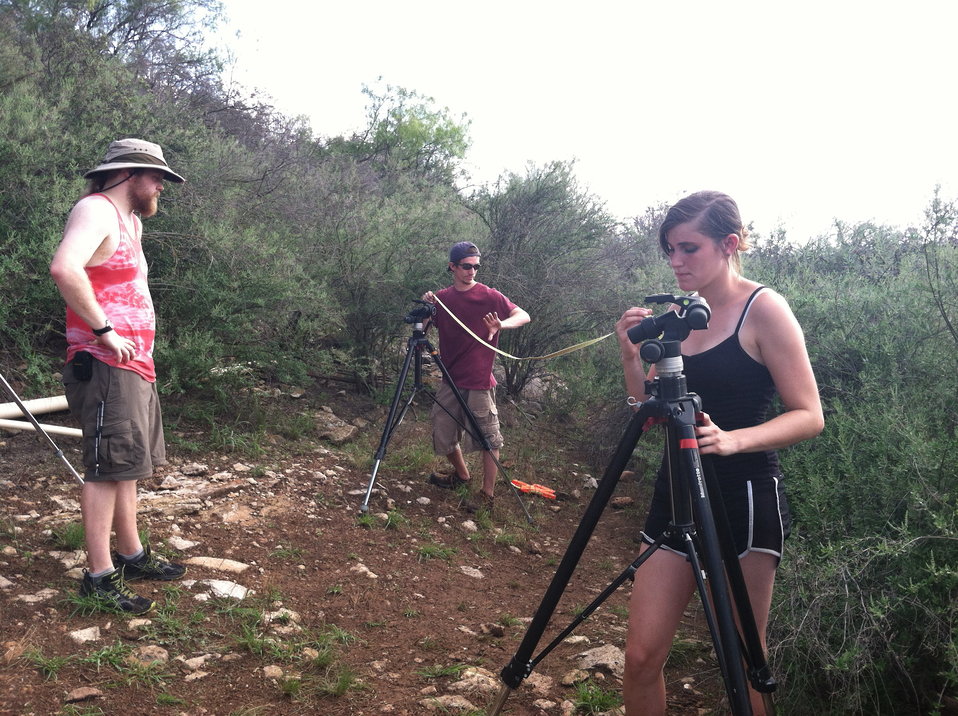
Setting up cameras at Davis Cave